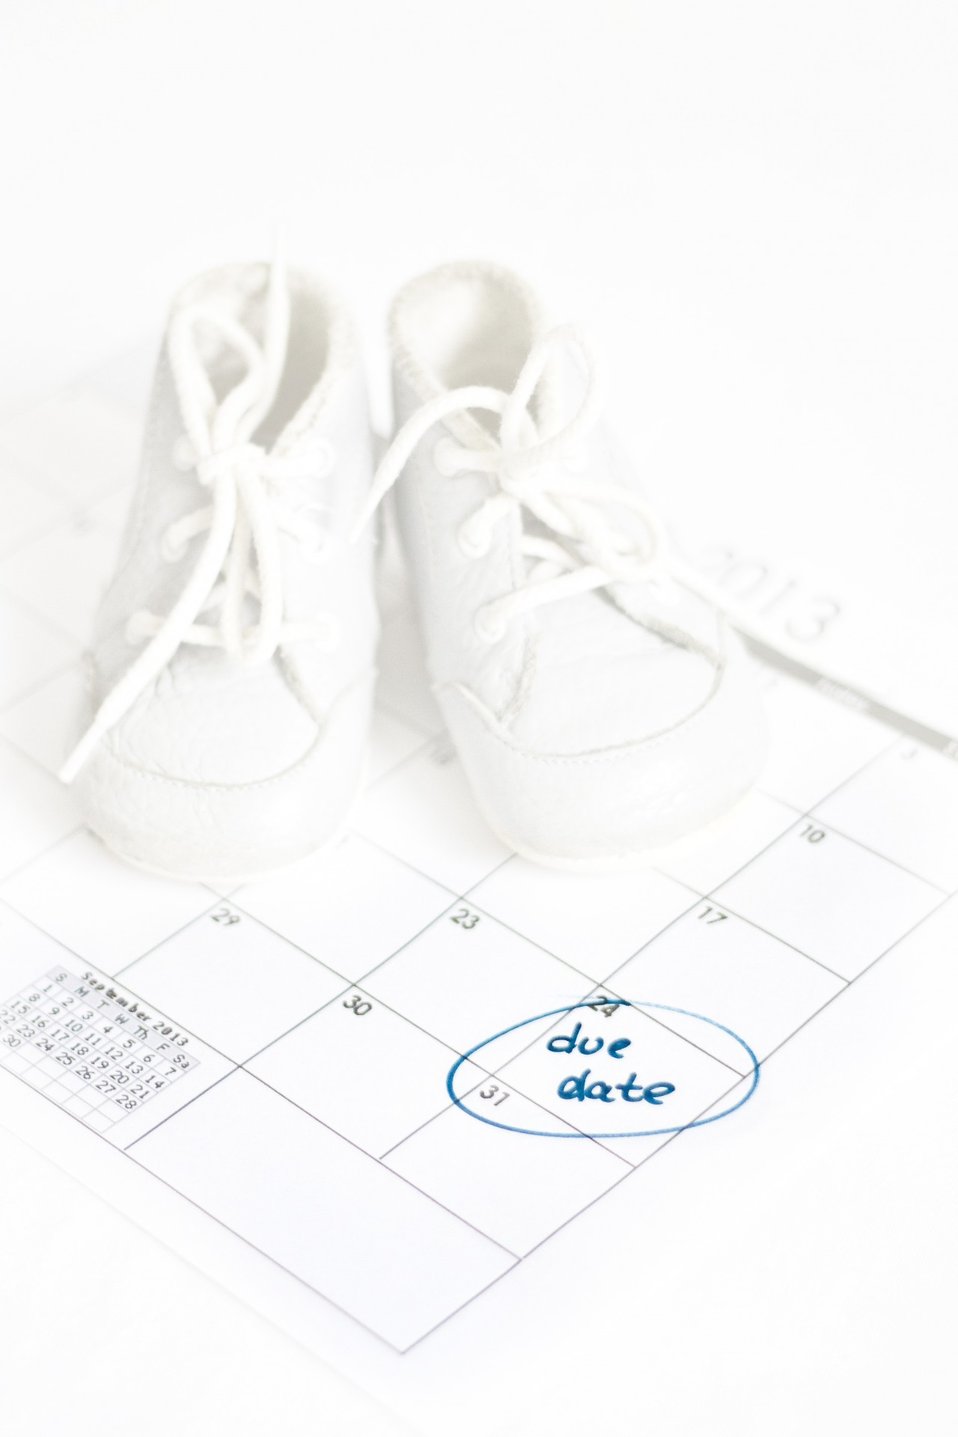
Due date calendar.